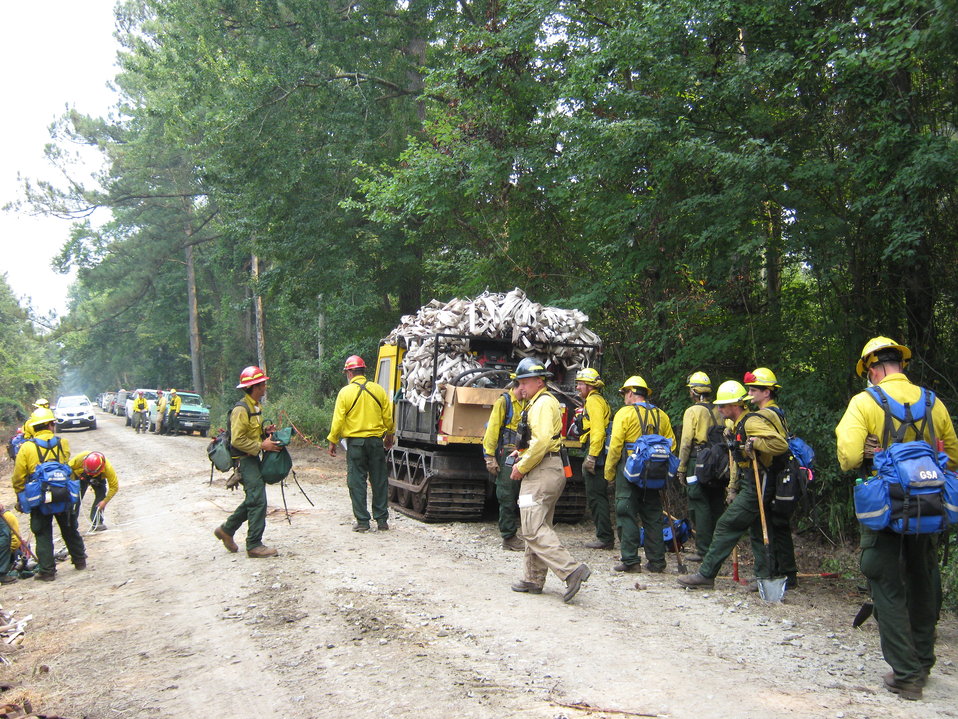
Preparing to lay hose

Suffolk, VA, August 2011. Firefighters organize to prepare for laying hose on the Lateral West Fire burning on Great Dismal Swamp National Wildlife Refuge. In their packs they carry fire shelters that they can deploy in event of emergency.